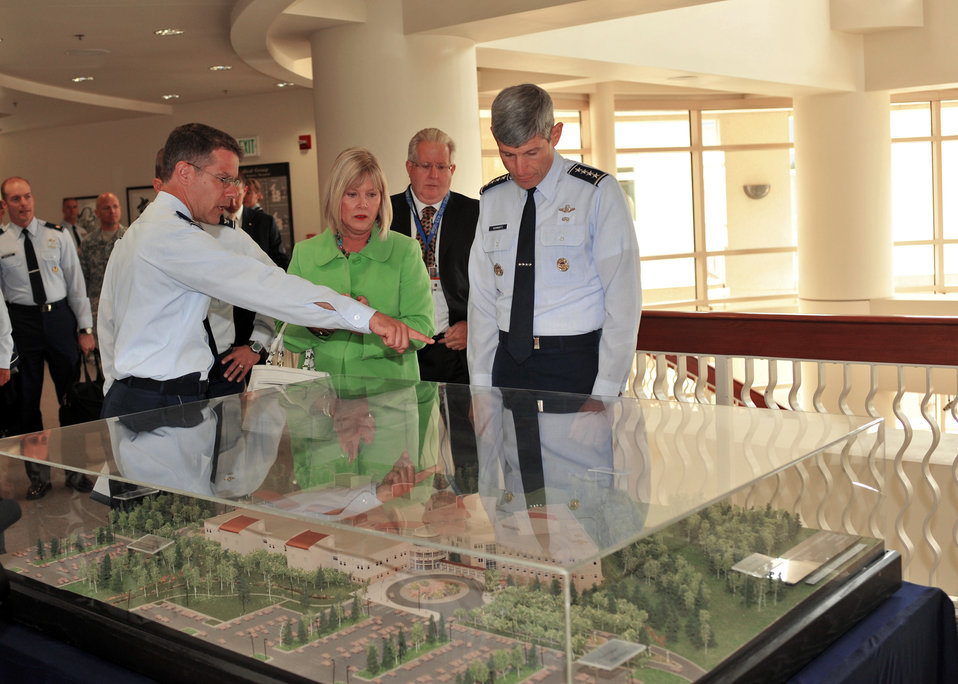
CSAF visit to Elmendorf AFB

Col. Paul Friedrichs, 3rd Medical Group commander, shows Air Force Chief of Staff Gen. Norton Schwartz and Mrs. Schwartz a model of the base hospital July 6 during their visit to Elmendorf Air Force Base, Alaska. The hospital has won Best Hospital in the Air Force two years in a row. Also observing the display is Alex Spector, Alaska's Veteran Affairs director.